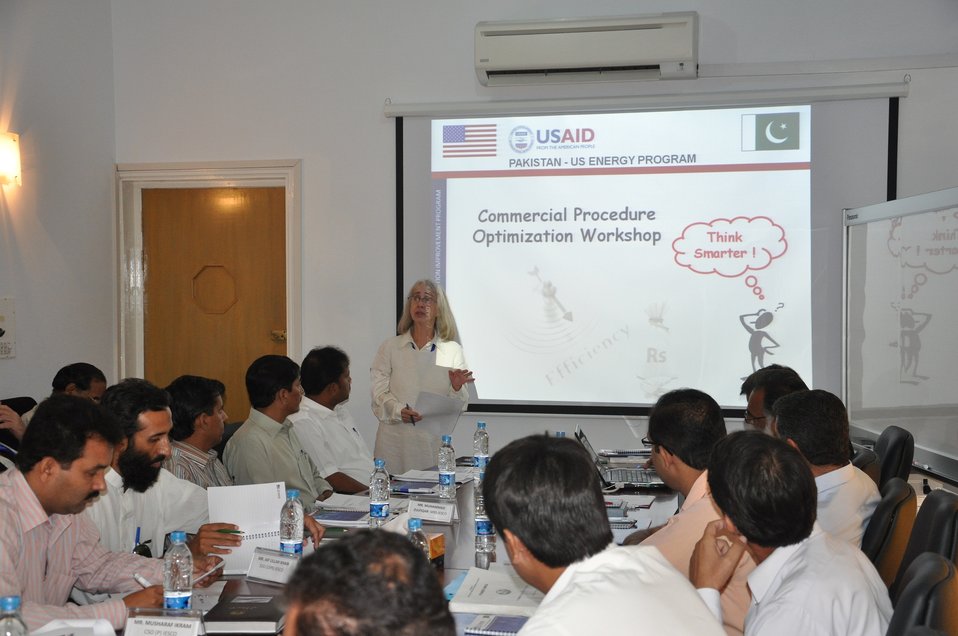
7 Sept 2011, Discussion on Recommendations (Proposed Changes) with Distribution Companies Senior Management

USAID's Power Distribution Program held a set of training workshops on September 7-8th aimed at improving the commercial procedures and efficiency of power distribution companies (DISCOs). The topics under discussion included the 'Meter Reading Process' and 'Meter Change Process' and finding ways to bring improvements to DISCOs' existing procedures by streamlining the flow of documents and eliminating redundancies without compromising transparency and accountability.